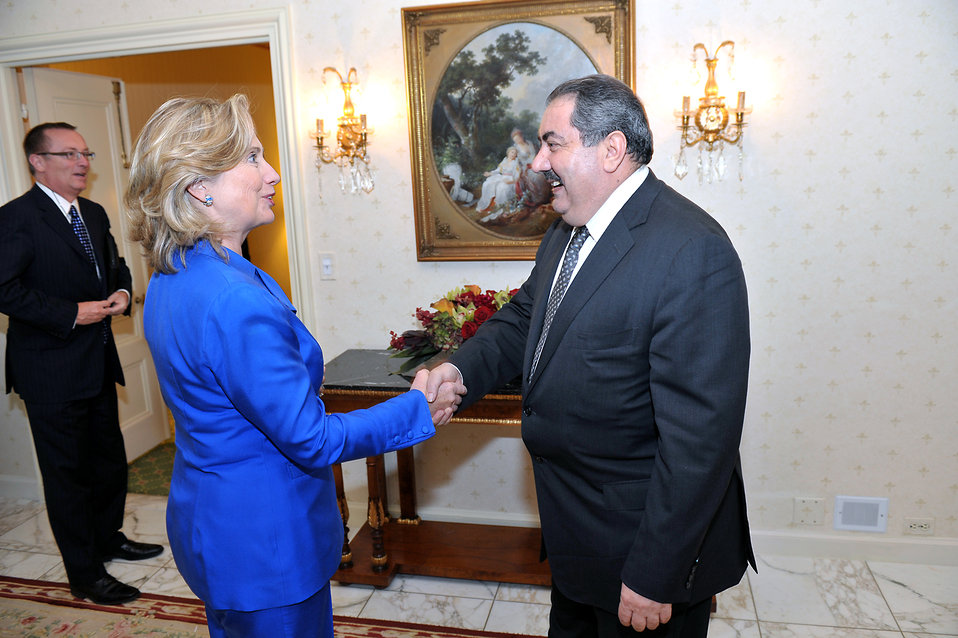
Secretary Clinton Shakes Hands With Iraqi Foreign Minister Zebari

U.S. Secretary of State Hillary Rodham Clinton shakes hands with Iraqi Foreign Minister Hoshyar Zebaria after their bilateral meeting at the Waldorf-Astoria in New York, New York, on September 23, 2010.